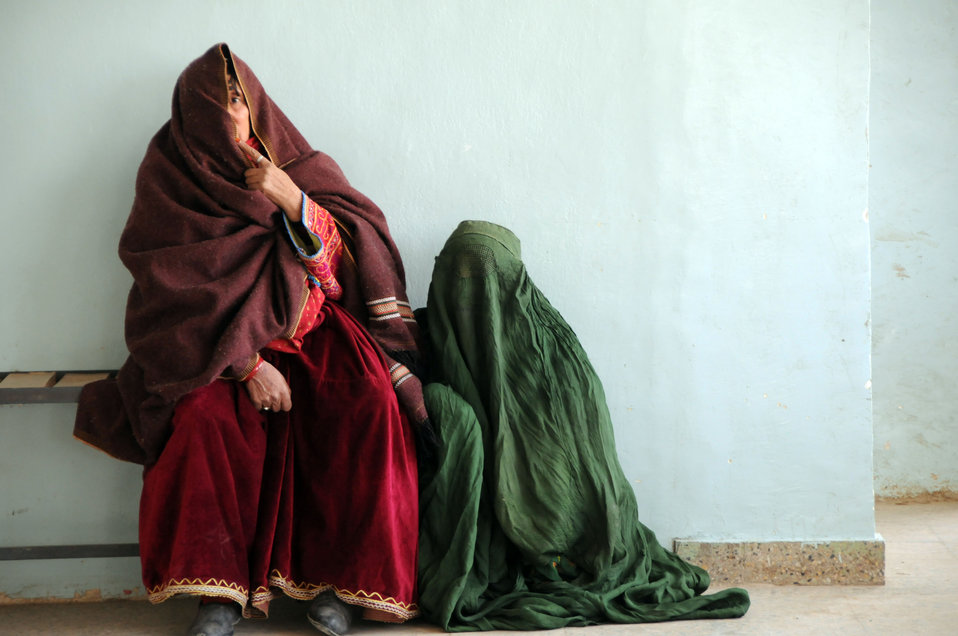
Veiled and apprehensive

Women sit in the waiting area outside the female outpatient department of the Moqur Comprehensive Health Clinic in Moqur, Afghanistan on Dec. 17, 2009. Medical staff from Provincial Reconstruction Team Ghazni visited the clinic to perform a comprehensive assessment of the clinics capabilities and needs.